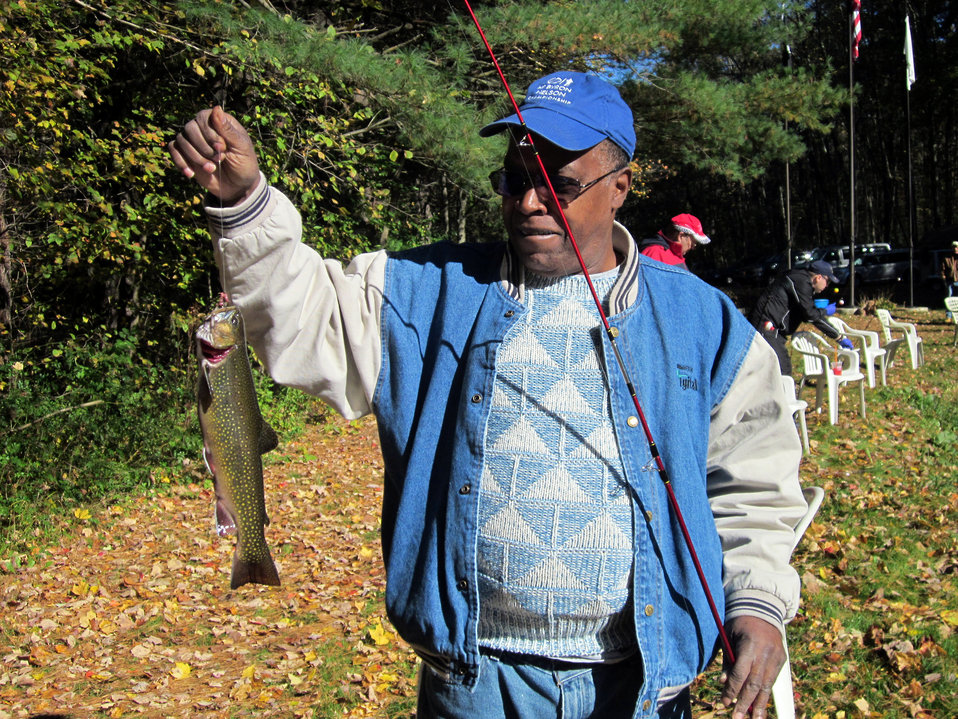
Fine brook trout

October 13, 2012, Sunderland, MA: Terry Henry, a Vietnam veteran of the Air Force displays a handsome brook trout he caught from a pond at the U.S. Fish and Wildlife Service's Richard Cronin National Salmon Station. This was Terry's second visit to fish the hatchery pond.